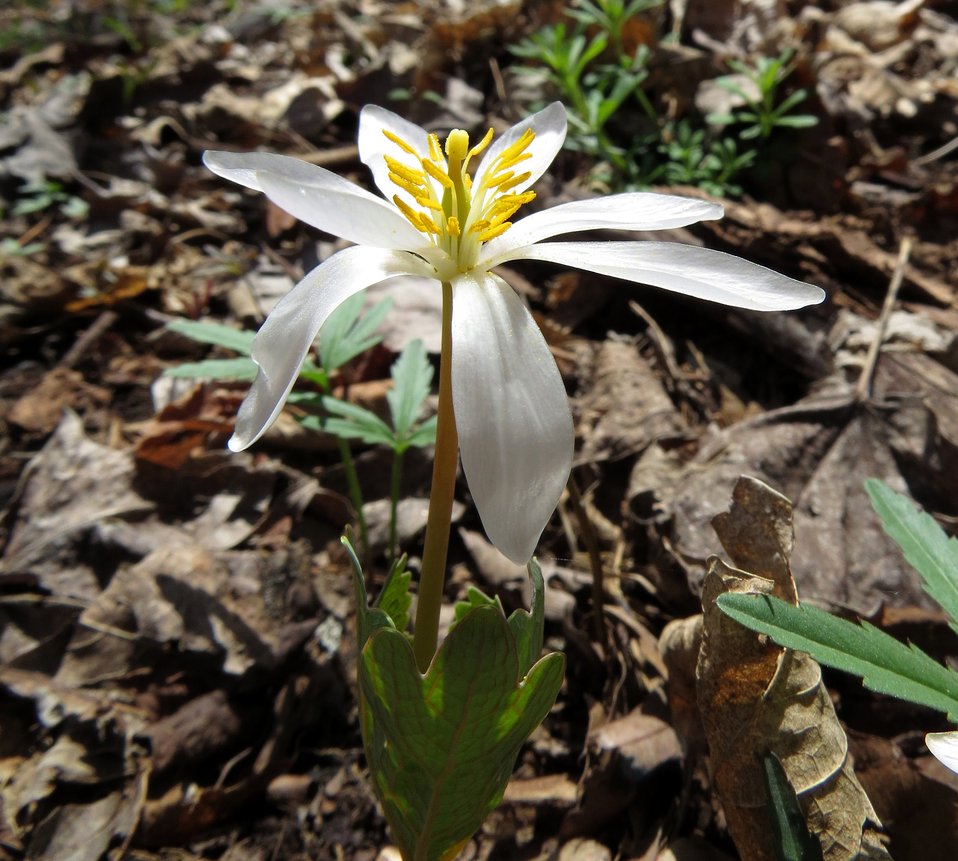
Blood Root